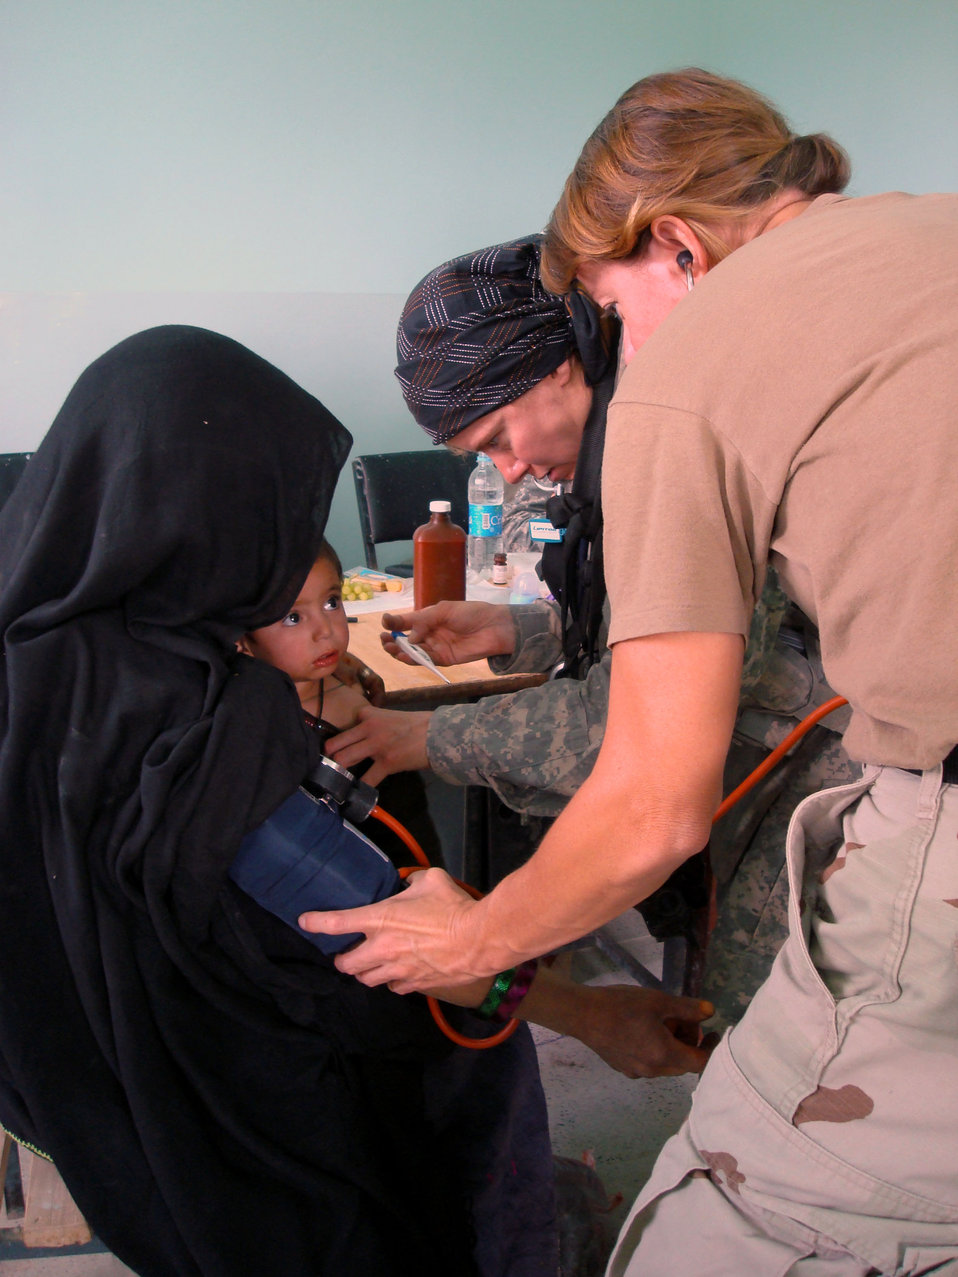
Small meds make big impact in Afghan village

Maj. Debra Roberts (center) and Navy Lt. Karen Nordine check vital signs on an Afghan woman and her child during a Village Medical Outreach Aug. 22 in the Shinkay District, Afghanistan. Nearly 200 people were seen by Provincial Reconstruction Team Qalat medics.